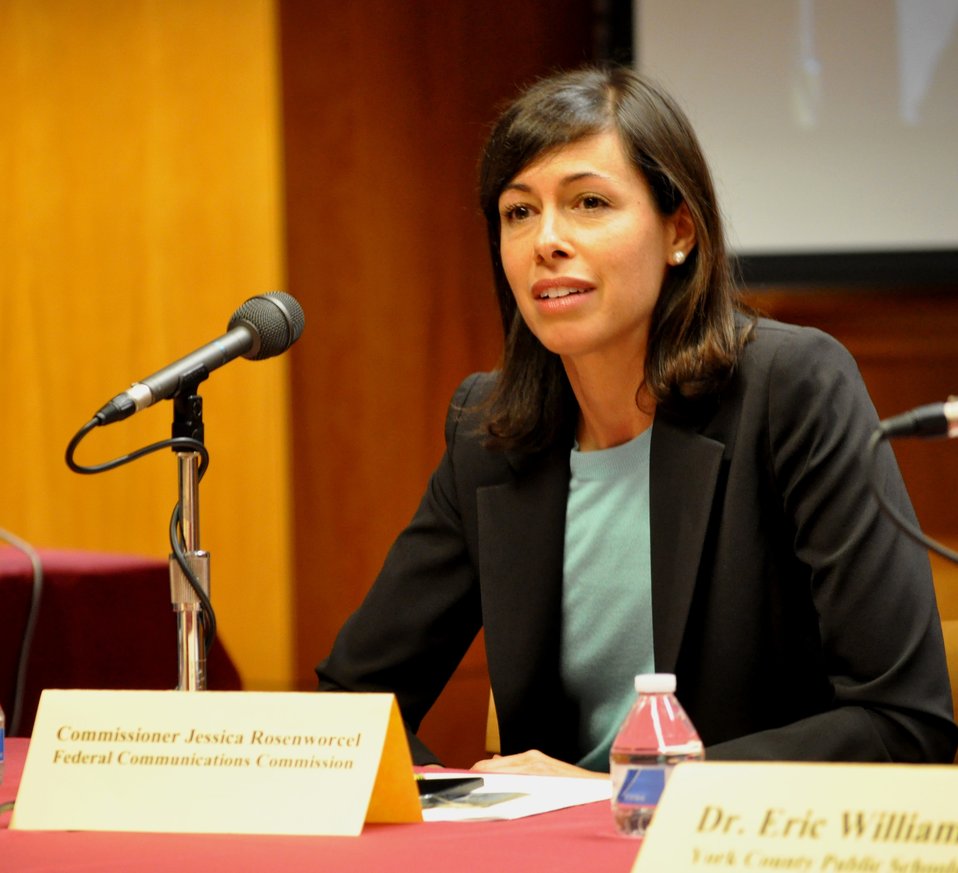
5.6.2014 E-Rate Modernization Workshop

Commissioner Jessica Rosenworcel